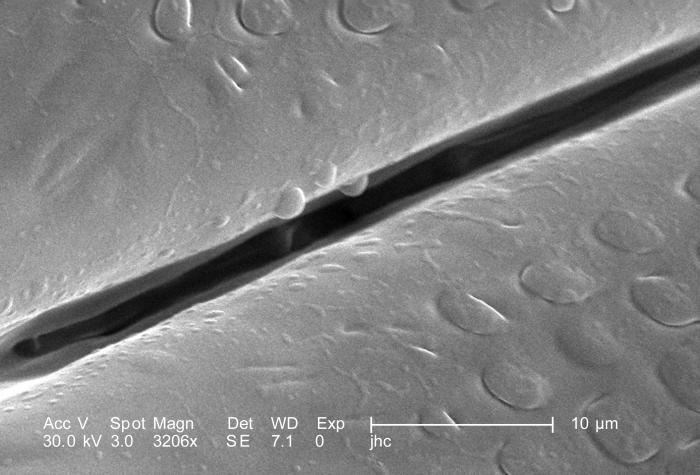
Under a magnification of 3206X, four times greater than PHIL 9965, this scanning electron micrograph (SEM) depicted a dorsal view of an unidentified male Dermacentor sp. tick found upon a cat in the suburbs of Decatur, Georgia, which measured approximately 3.5mm from its gnathosoma (seen here) (i.e., capitulum), which is where its mouthparts are located, to the distal abdominal margin (PHIL 9961). Note in PHIL 9959 and 9960, that the entire dorsum of this tick's abdomen is covered by its tough 'scutum', or 'shield', categorizing it as a male. In female Ixodid-species ticks, the scutum only partially covers the dorsal abdomen. Revealed in this image is the base of the hypostome, which is one of the tick's mouthparts that acts to pierce the host skin surface, thereby, anchoring the tick to the host as it obtains its blood meal. See PHIL 9964 for another view of the foliated hypostomal surface.